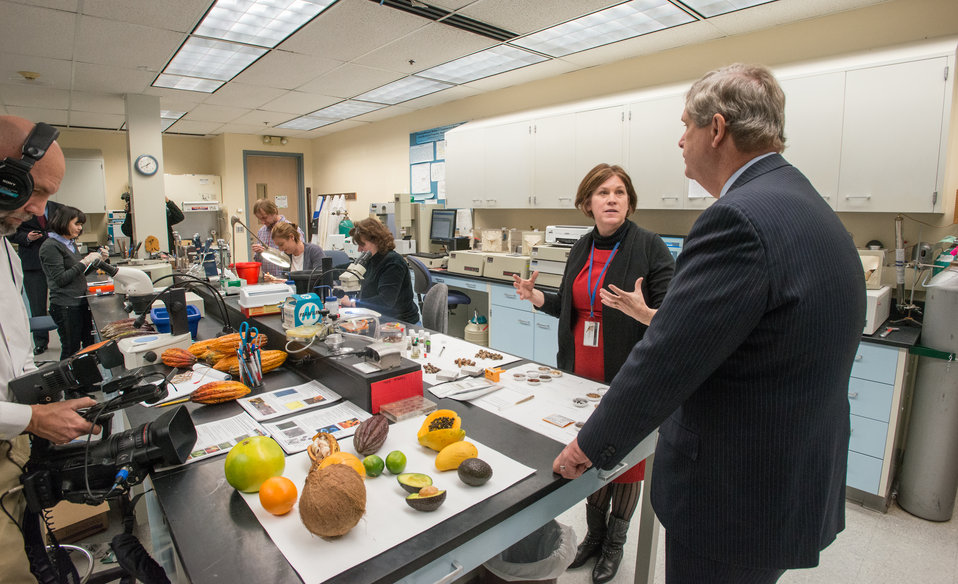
U.S. Department of Agriculture (USDA), Agriculture Research Service (ARS), National Center for Genetic Resources Preservation (NCGRP), Plant Germplasm Preservation Research Unit (PGPRU) Research Leader, Research Plant Physiologist Dr. Gayle Volk explains to Agriculture Secretary Tom Vilsack the research that is being conducted, in Ft. Collins, CO, on Wednesday, Nov. 6, 2013.